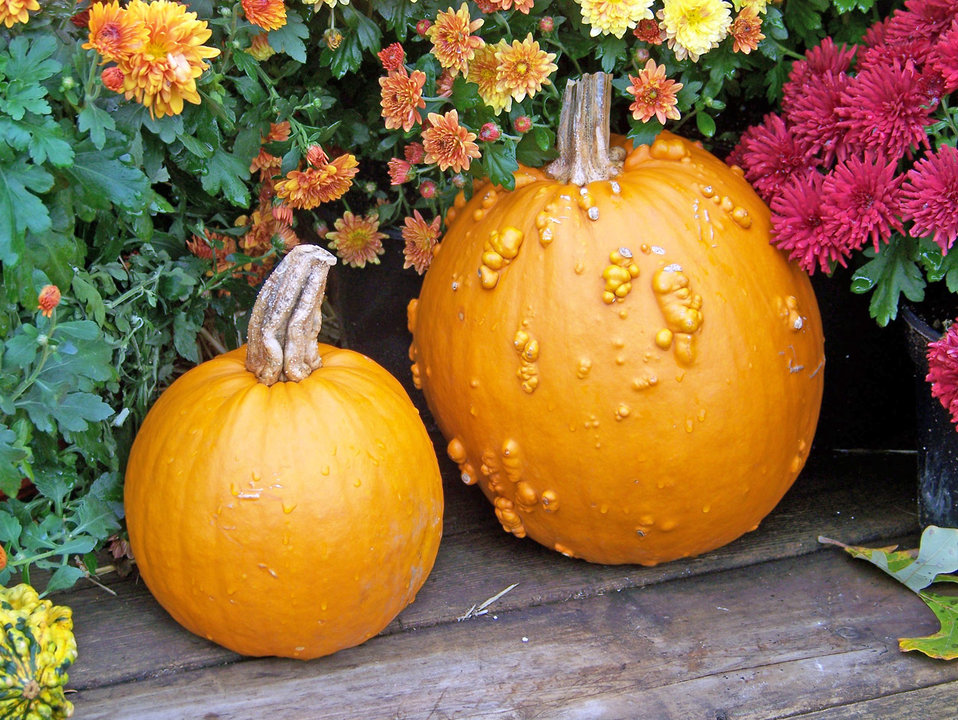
Pumpkins

Pumpkin and flowers.